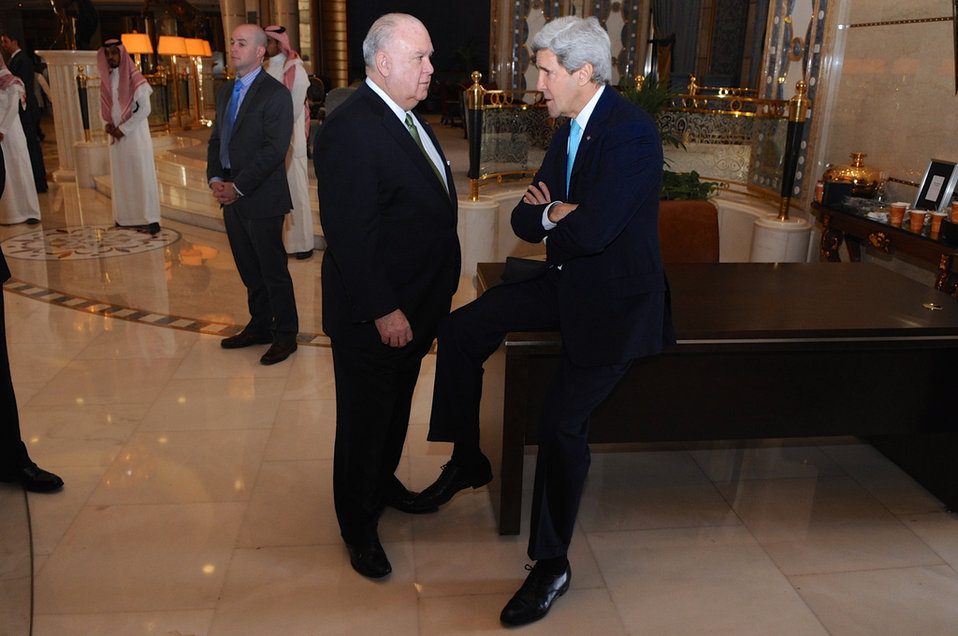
Secretary Kerry Chats With Ambassador Westphal Before Departing From Saudi Arabia

U.S. Secretary of State John Kerry chats with U.S. Ambassador to Saudi Arabia Joseph Westphal before departing from Riyadh on March 29, 2014, for upcoming meetings in Europe.